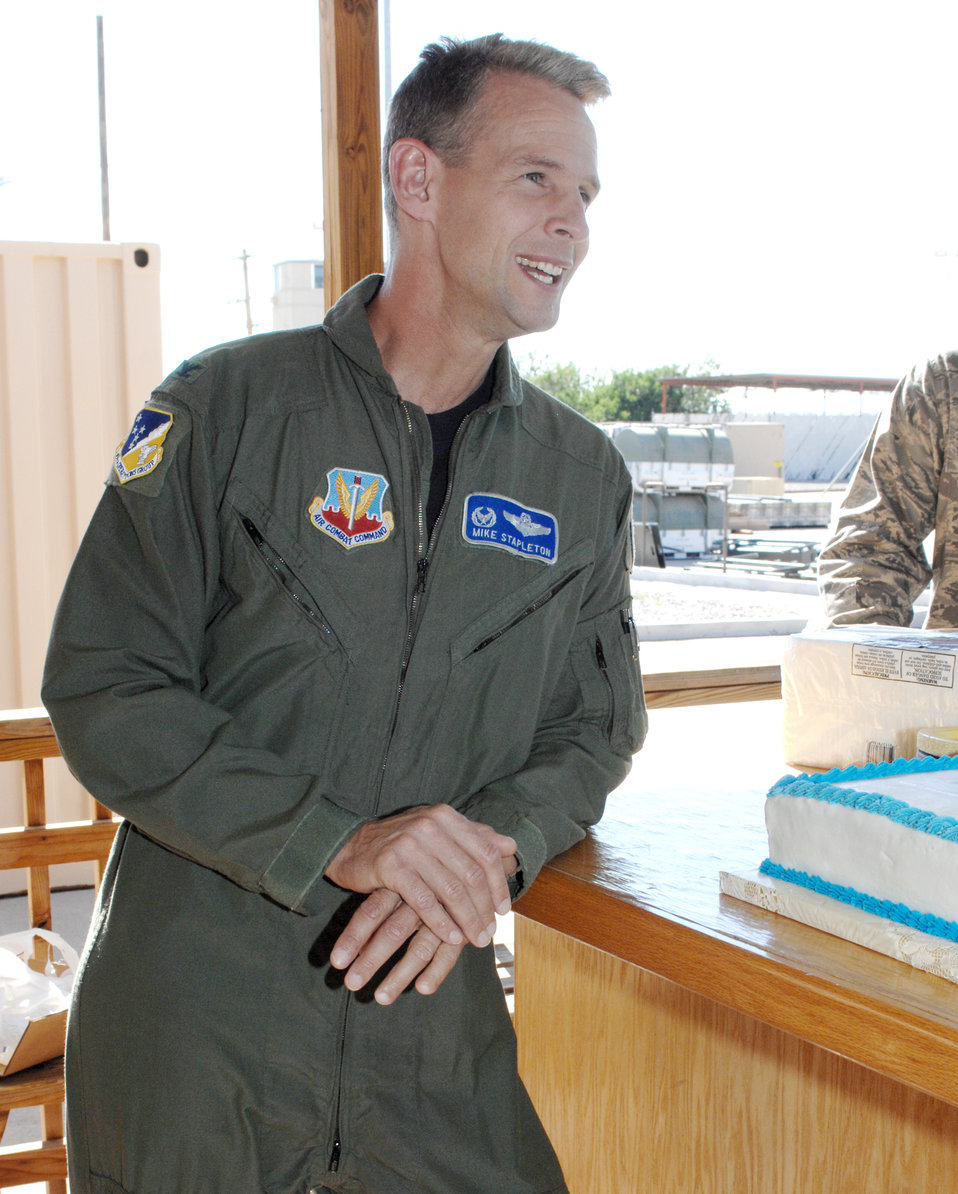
Colonel beats cancer and soars high

Col. Michael Stapleton, the 49th Fighter Wing Operations Group commander, was diagnosed with cancer in 2006. He beat cancer and is now back flying in F-22 Raptors and T-38 Talons at Holloman Air Force Base, N.M.